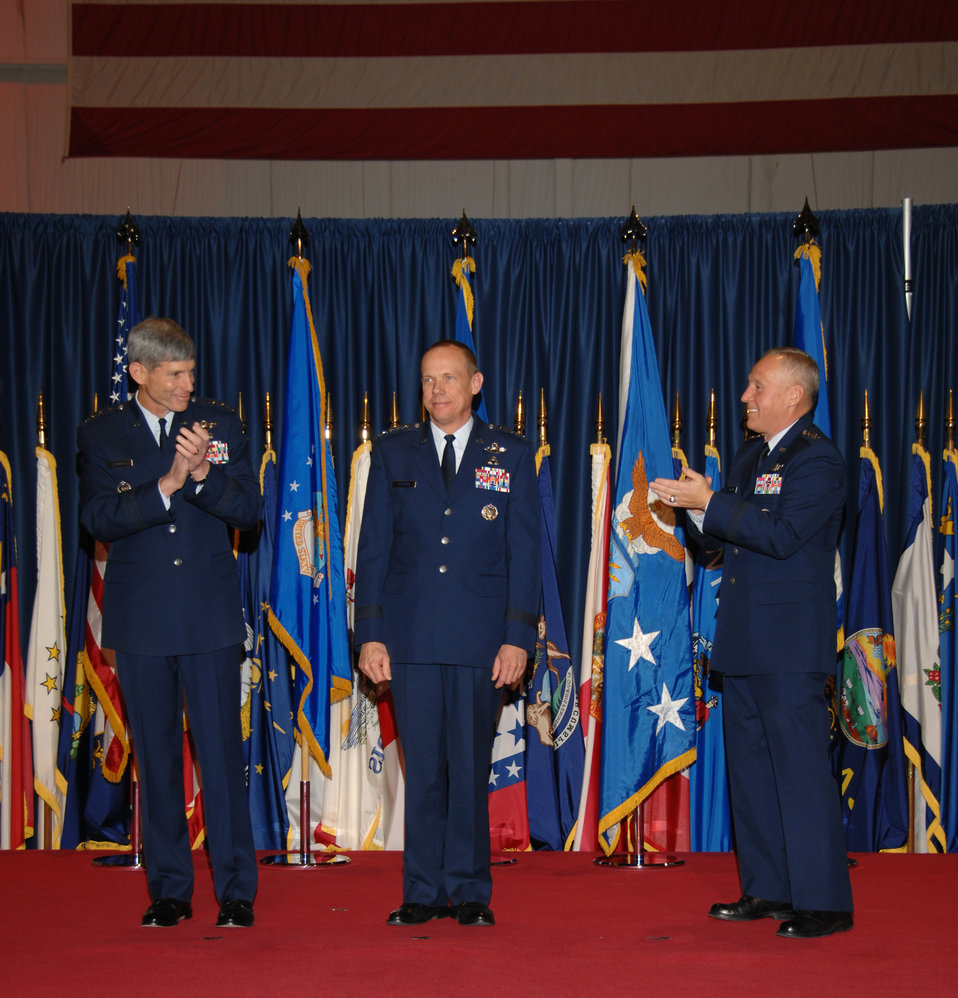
AFMC change of command

Air Force Chief of Staff Gen. Norton Schwartz (left) and Gen. Bruce Carlson (right) congratulate Gen. Donald Hoffman, who became the seventh commander of Air Force Materiel Command during a change-of-command ceremony Nov. 21. General Hoffman succeeds General Carlson, who is retiring almost 38 years of service. The event took place inside the National Museum of the United States Air Force at Wright-Patterson Air Force Base, Ohio.